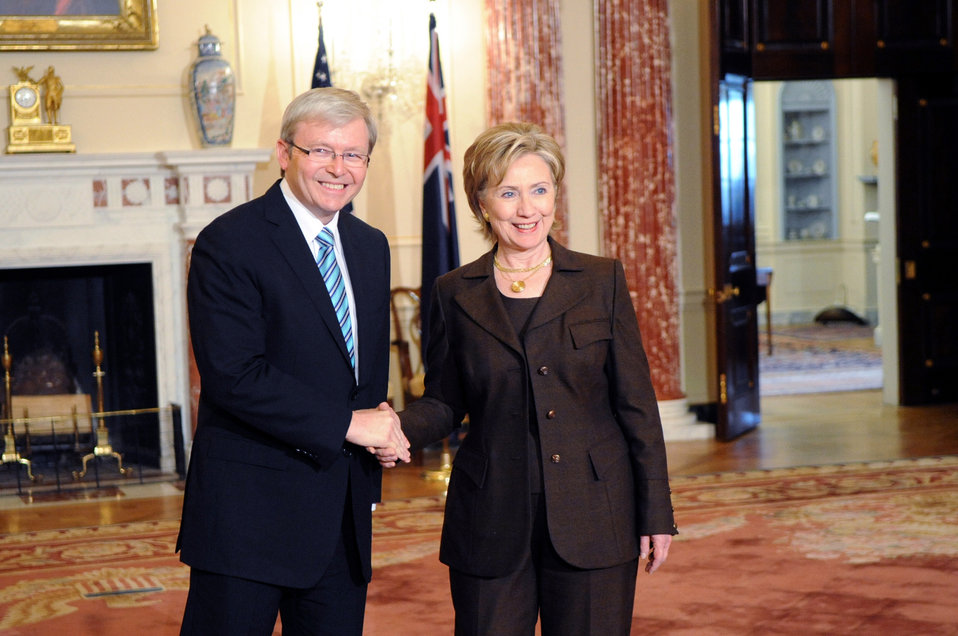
Secretary Clinton Meeting With Australian Prime Minister

U.S. Secretary of State Hillary Rodham Clinton during a meeting with Australian Prime Minister Kevin Michael Rudd in Washington, DC March 24, 2009.